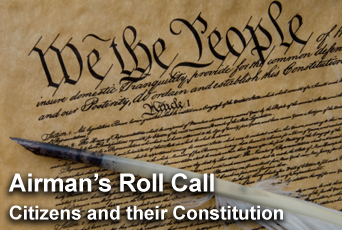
Airman's Roll Call highlights Constitution, Citizenship Day

This week's Airman's Roll Call reminds Airmen of the importance of the Constitution and the cost of citizenship in America.